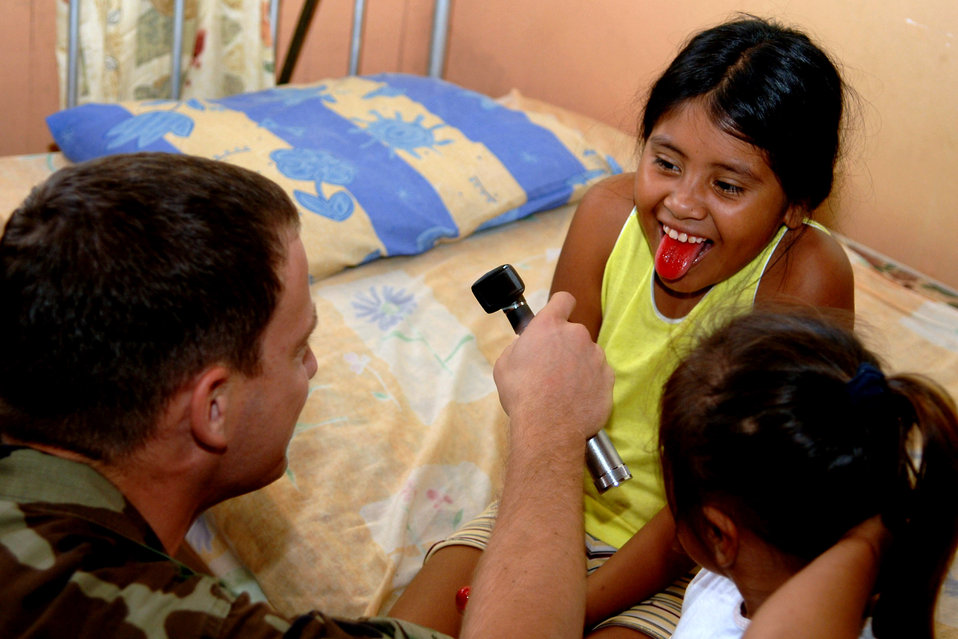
Air Force medics take medical mission to Bolivia

Maj. Scott Shepherd makes a daring attempt to have a Bolivian girl say